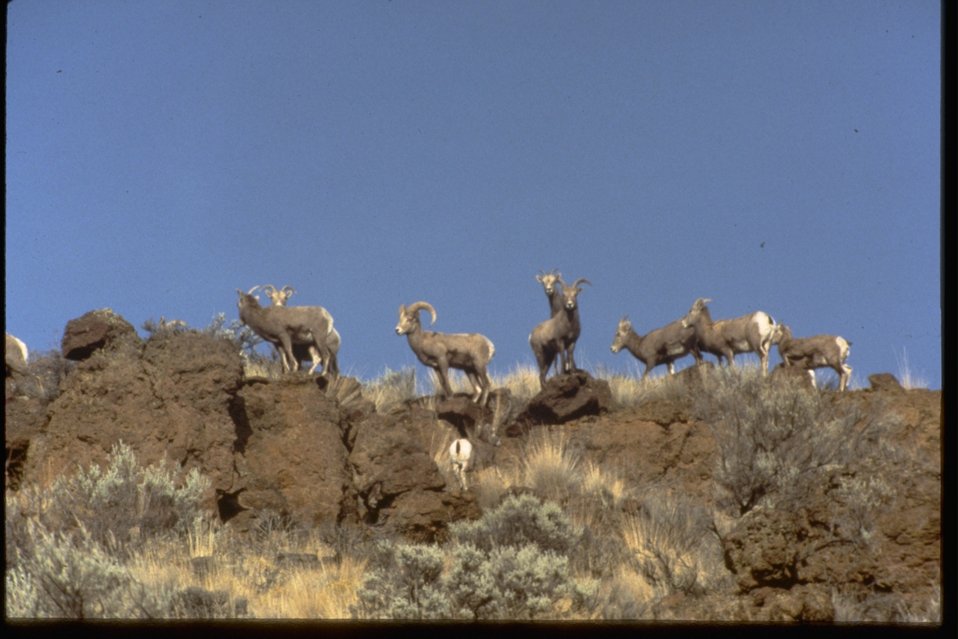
10 Big Horn Sheep standing on rocky ledge.